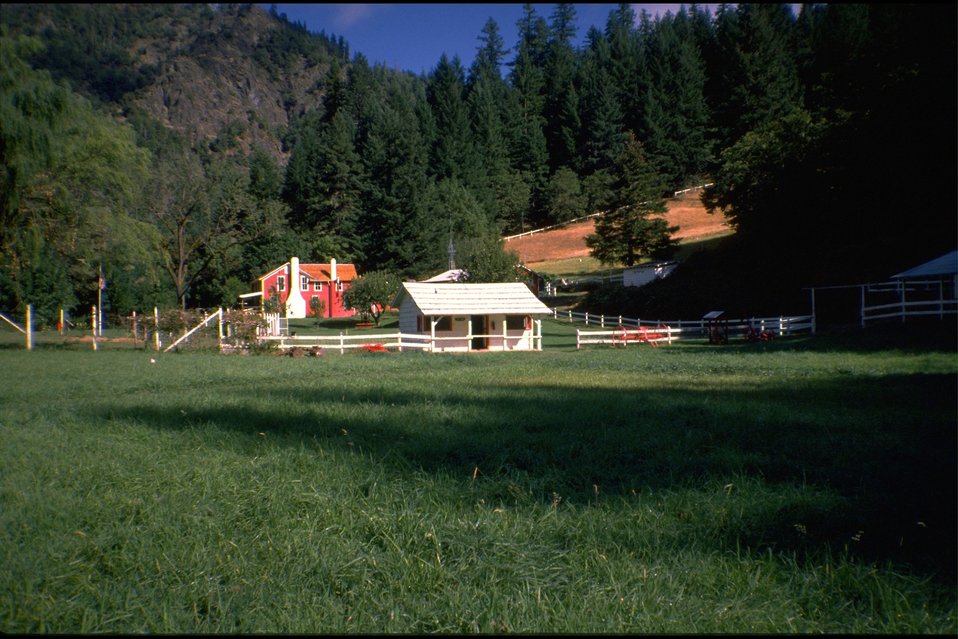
Rogue River; Rogue River Ranch at Mule Creek. Tack House and Main House.